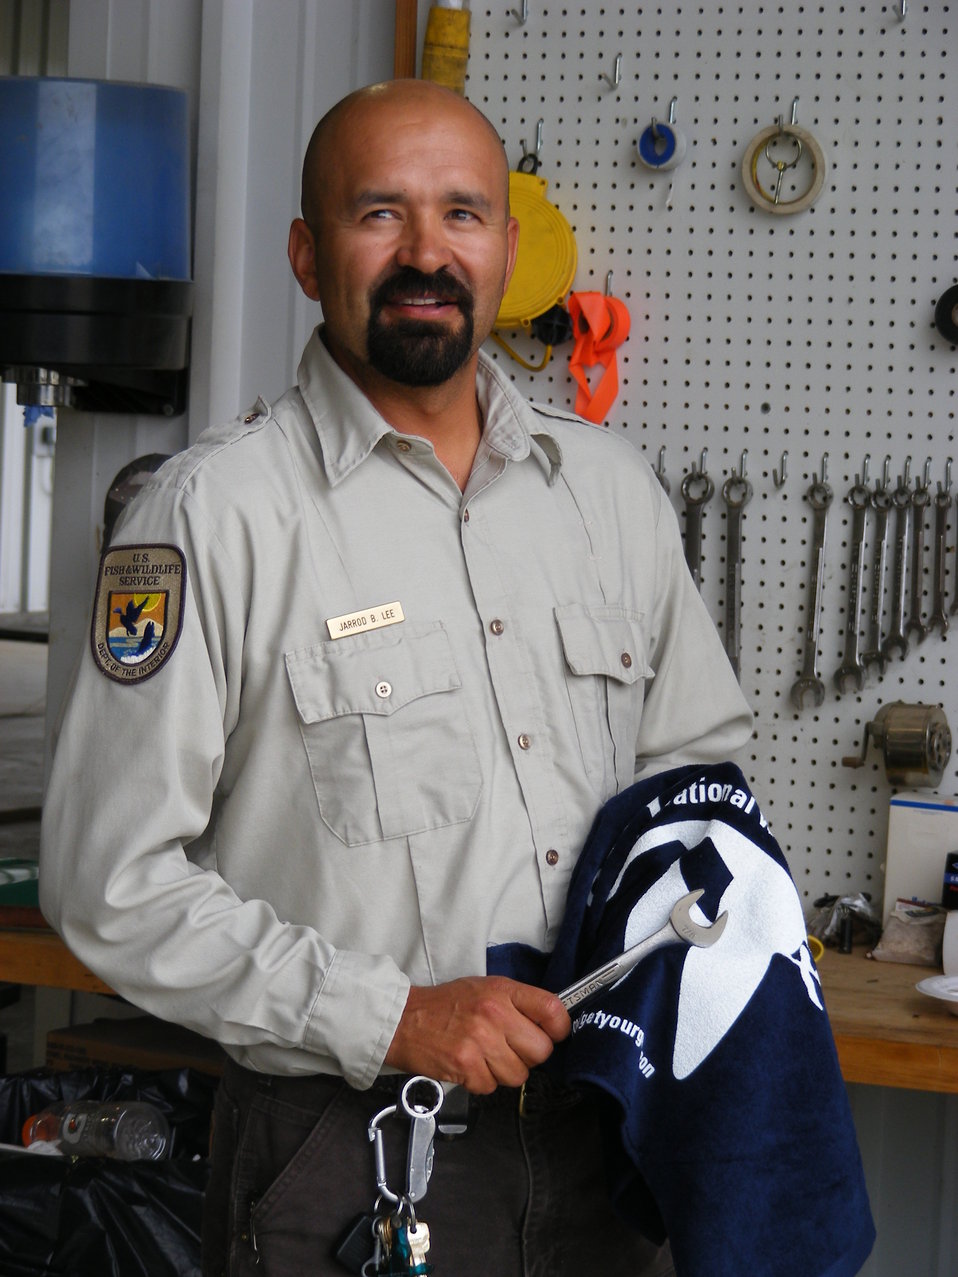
Shop Rag - Get Your Goose On! Style